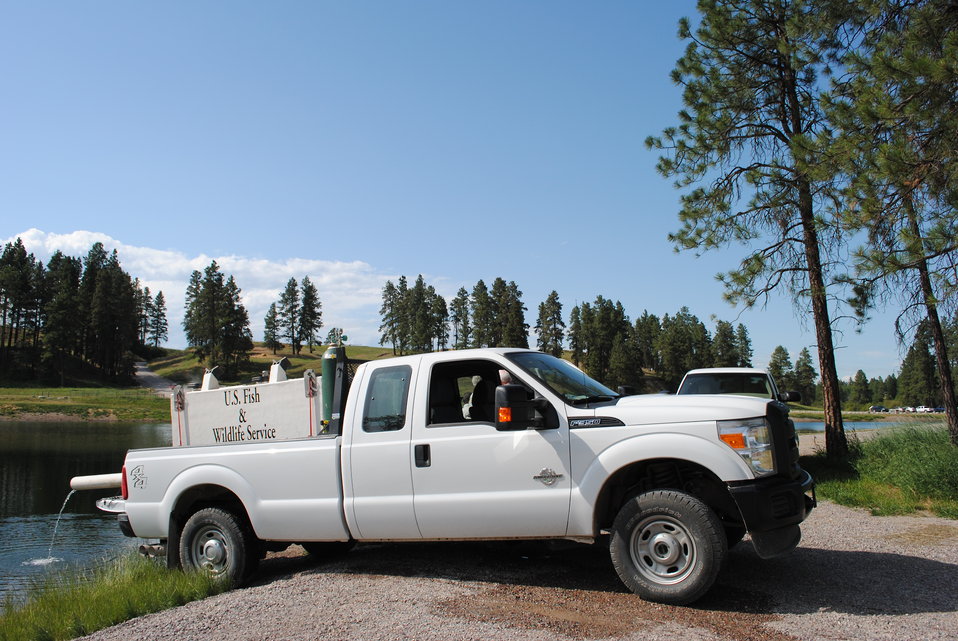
Creston National Fish Hatchery Stocking Fish at Birch Grove